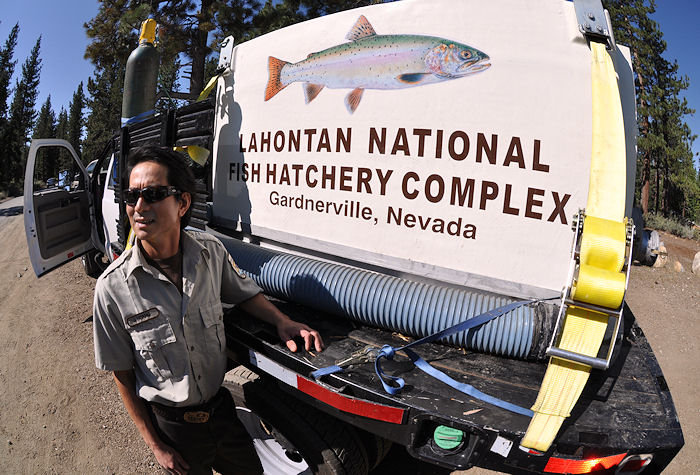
Lahontan Nat'l Fish Hatchery truck

Stocking more than 8,000 Lahontan cutthroat trout in Fallen Leaf Lake, Tahoe Basin, Calif., September 10, 2010.